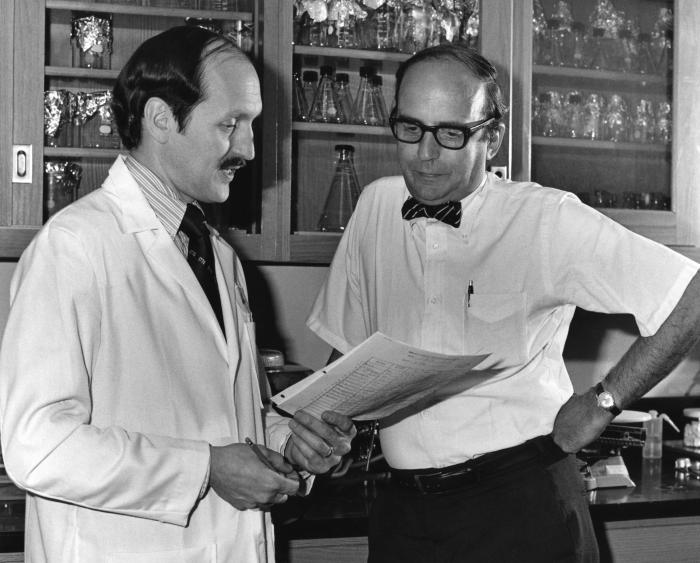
This 1976 photograph, taken at the Centers for Disease Control headquarters in Atlanta, Georgia, showed Gary Noble, M.D., M.P.H. (left) going over laboratory findings with David J. Sencer, M.D., M.P.H.